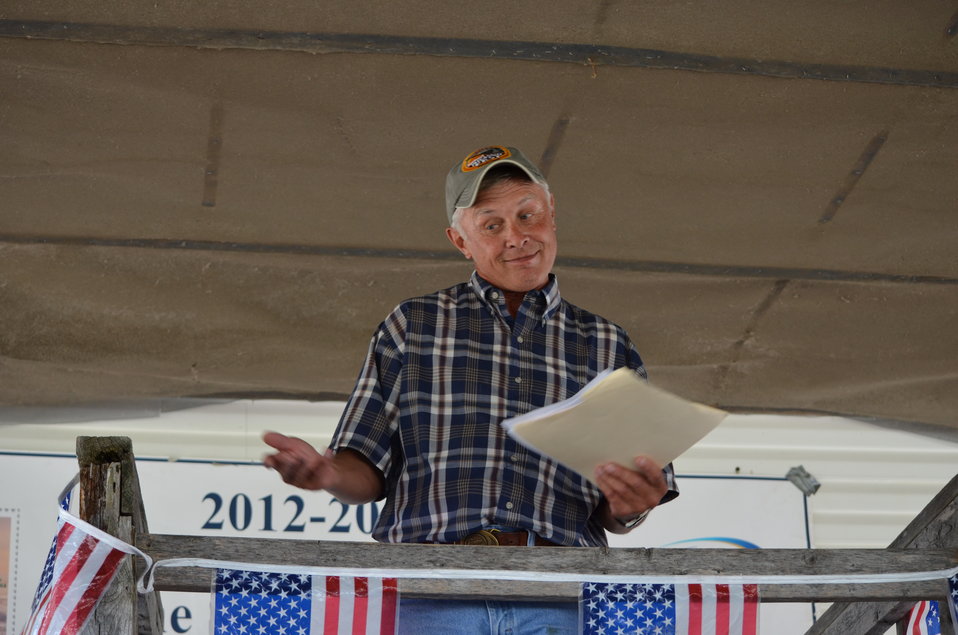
Emcee Billy Hildebrand.